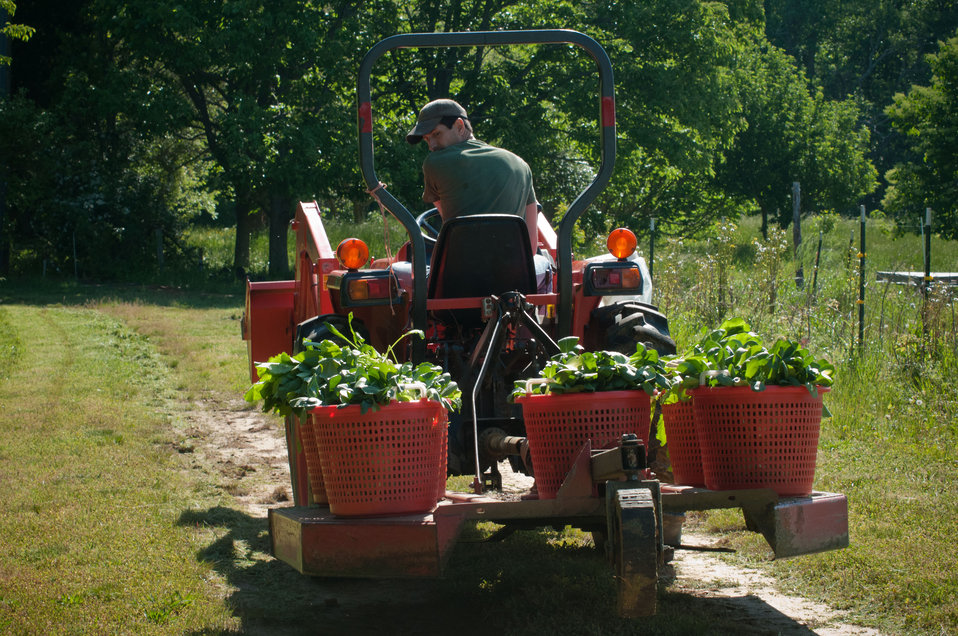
Reece Latron uses a tractor's mower attachment to carry baskets of greens harvested from Amy's Organic Garden in Charles City, VA, on Thursday, May 5, 2011, in preparation for a farmer's market tomorrow. The farm also participates with Fall Line Farms a local food cooperative in the Richmond, VA area that offers a wide variety of household food staples and specialty items on an ever changing inventory of fruits, vegetables, meats, soaps, eggs, cheeses, flowers, honey, pastas, sauces, syrups, baked goods, mushrooms, flour and grains. Suppliers post what they have on a Lulus Local Food online listing and customers can make their selection. Every Thursday suppliers deliver orders to, one of several pick-up points, designated by the customers in or around the Richmond area.